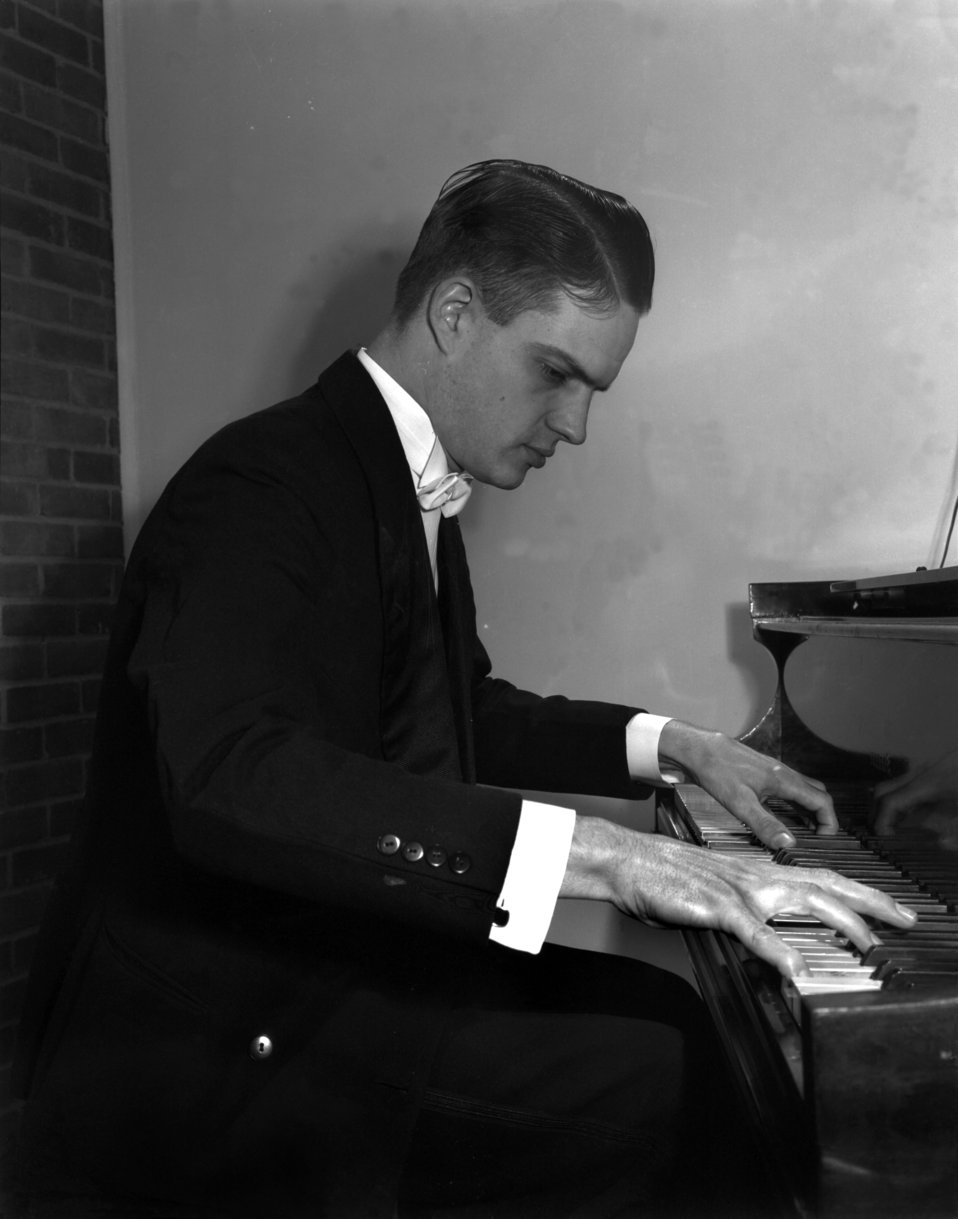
Col. D.G. Williams Oak Ridge

3257-4a DOE photo Ed Westcott 1-17-1947 Oak Ridge Tennessee